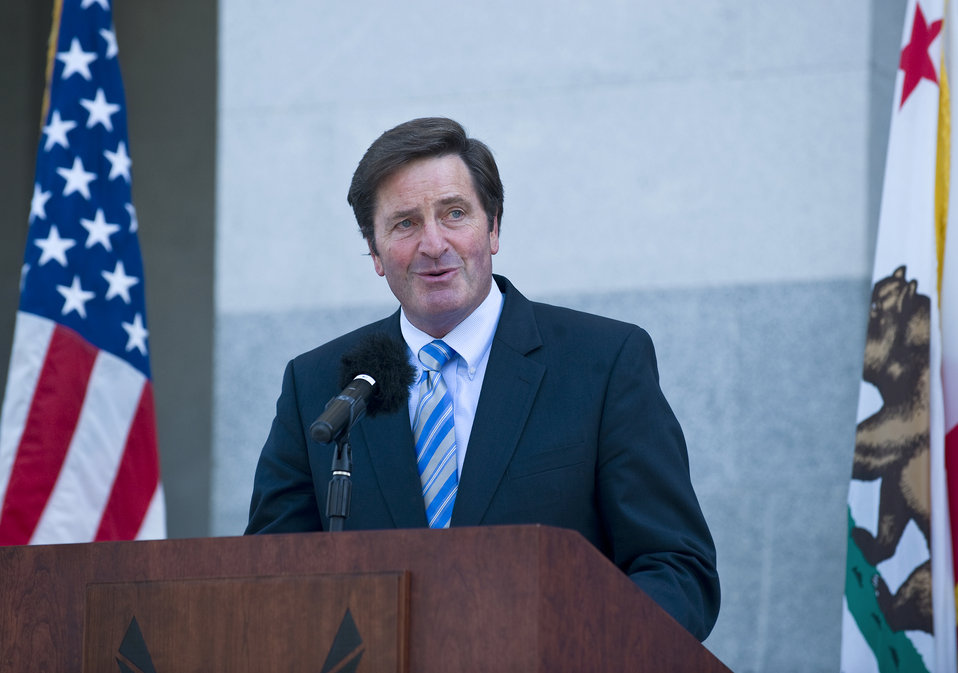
Air Force Week-Sacramento

California Lt. Gov. John Garamendi speaks on the important role of the Air Force in the State of California during a proclamation ceremony Sept. 8, on the steps of the California State Capitol Building naming Sept. 8 to 13 as Air Force Week Sacramento. Air Force Week Sacramento is an event using various activities and exhibitions to educate the local community about the Air Force's capabilities and missions.